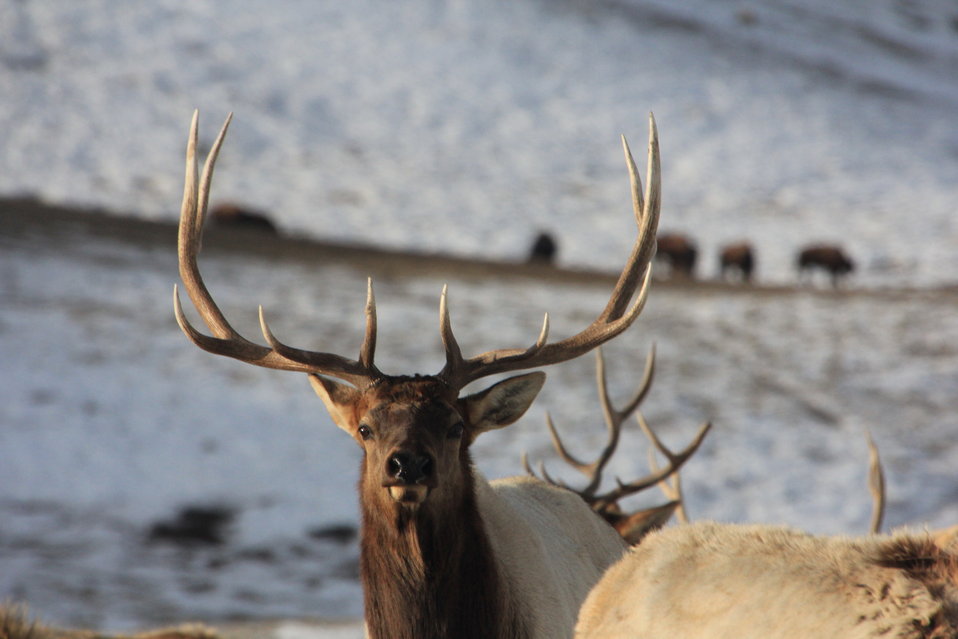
A Striking Portrait

A bull elk strikes a pose in the morning light on the National Elk Refuge.

Credit: USFWS / Tony Hough, refuge volunteer